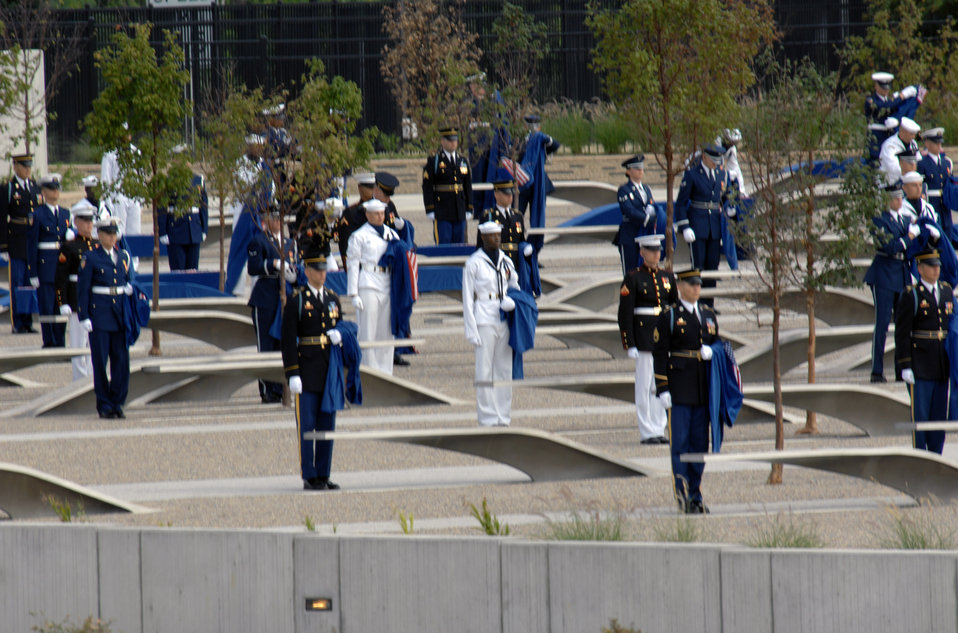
Pentagon Memorial opens to public

One hundred eighty-four joint service troops unveil the Pentagon Memorial Sept. 11 at Alexandria, Va. The national memorial is the first to be dedicated to those killed at the Pentagon on Sept. 11, 2001. The site contains 184 inscribed memorial units honoring the 59 people aboard American Airlines Flight 77 and the 125 in the building who lost their lives that day.